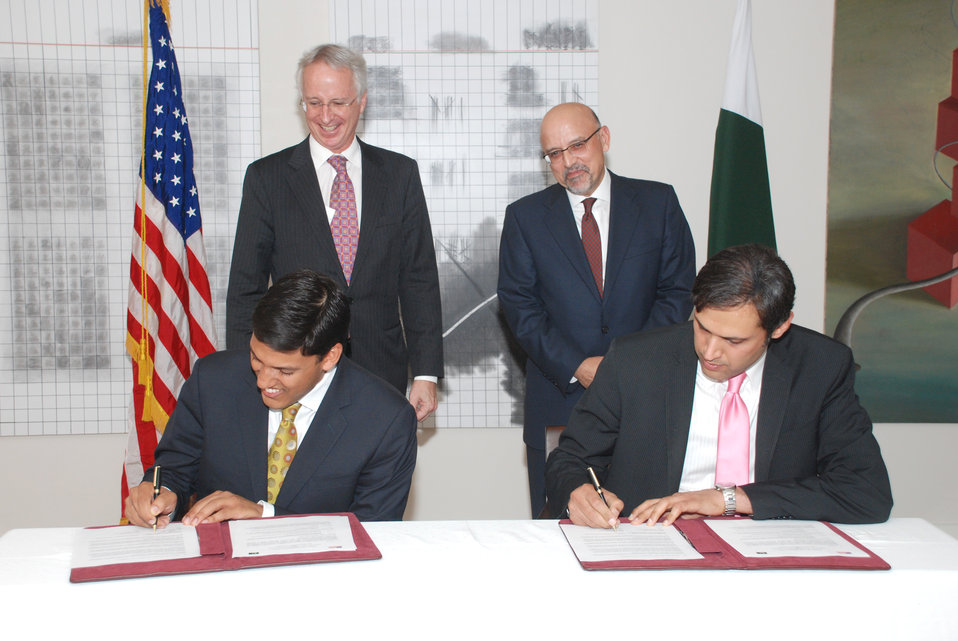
MoU Signing Ceremony between USAID and APF at Islamabad on April 18, 2012

MoU Signing Ceremony between USAID & APF and Dr. Rajiv Shah & Mr. Awais Khan is signing the MoU